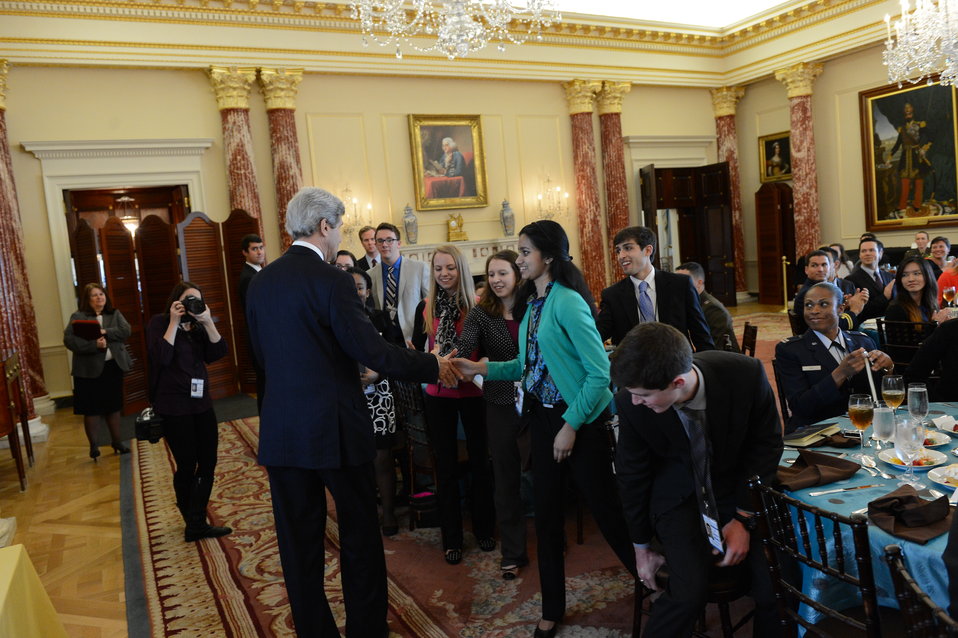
Secretary Kerry Shakes Hands With Senate Youth Program Participants

U.S. Secretary of State John Kerry shakes hands with Senate Youth Program participants at the U.S. Department of State in Washington, D.C., on March 12, 2013.